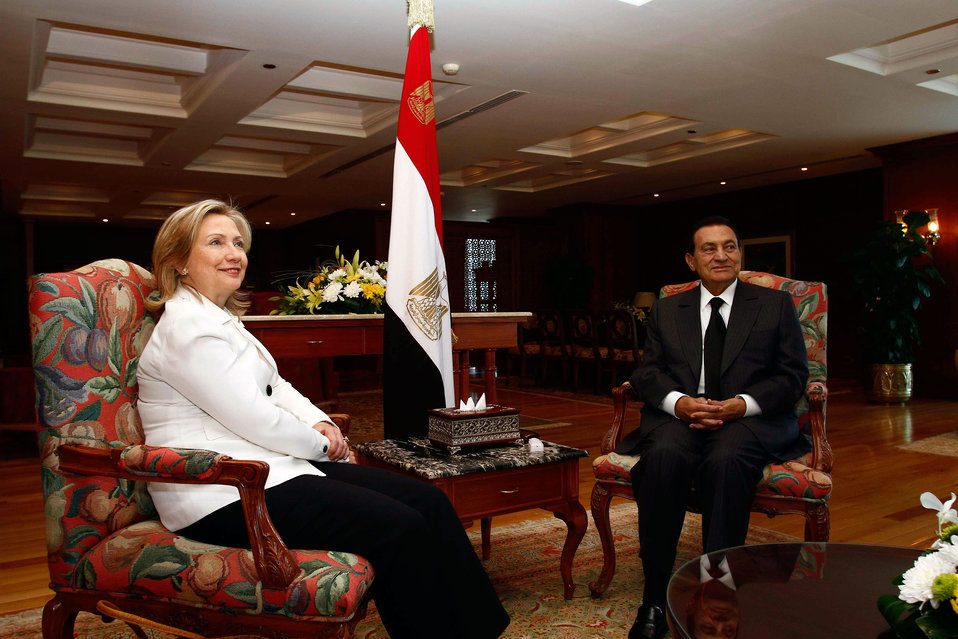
Secretary Clinton Meets With Egyptian President Mubarak

U.S. Secretary of State Hillary Rodham Clinton meets with Egyptian President Hosni Mubarak in Sharm El-Sheikh, Egypt, on September 14, 2010.